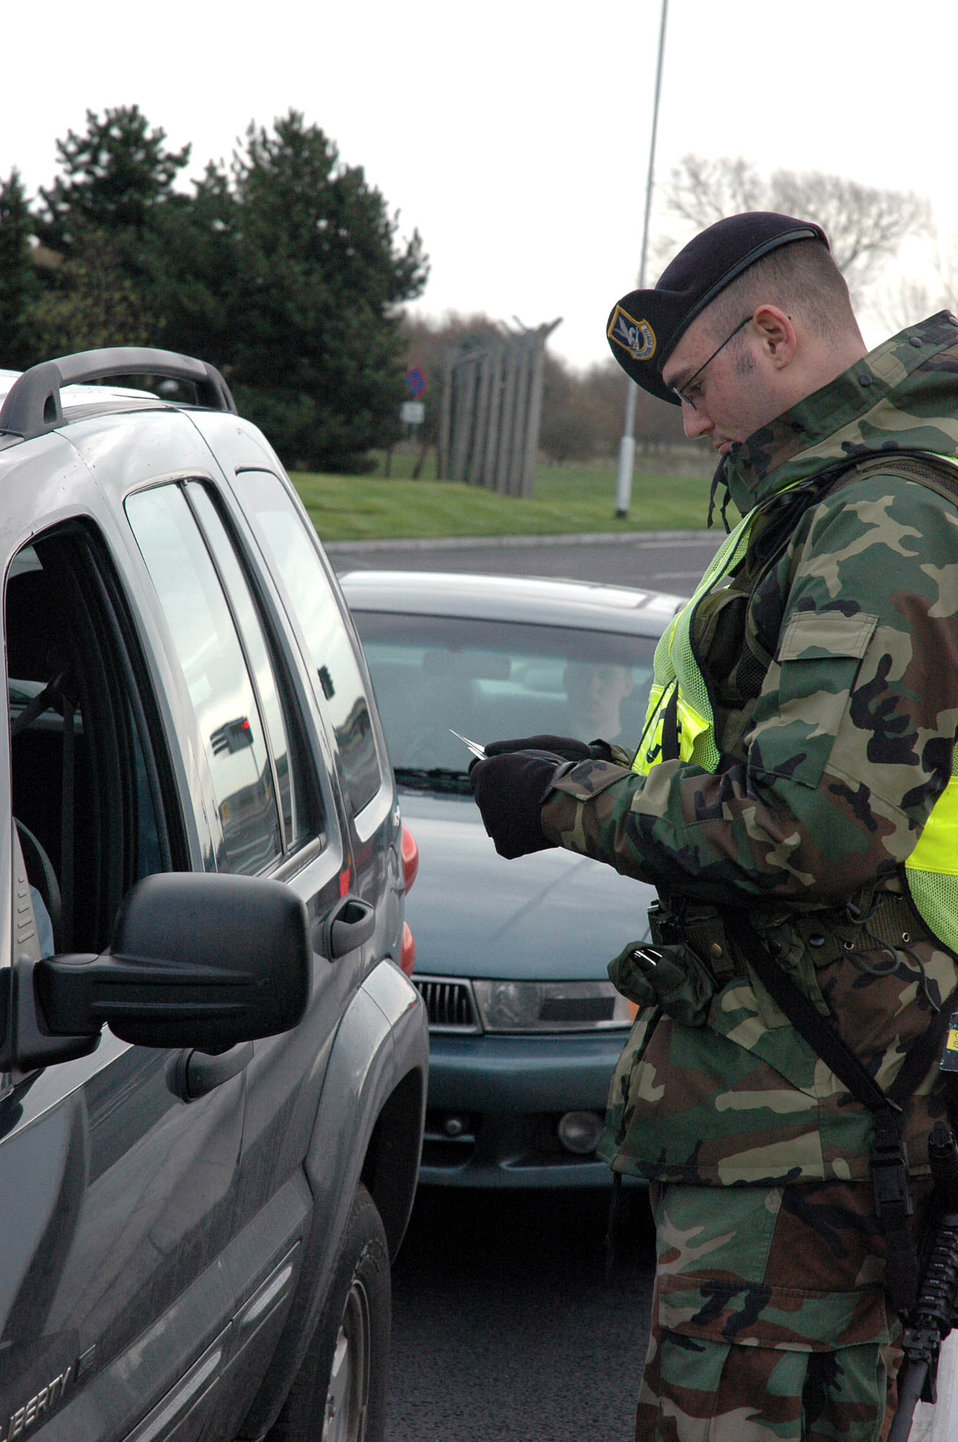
Serving through the season: Airman 1st Class Jack Smithson III

Airman 1st Class Jack Smithson III works in security forces at Royal Air Force Lakenheath, United Kingdom.